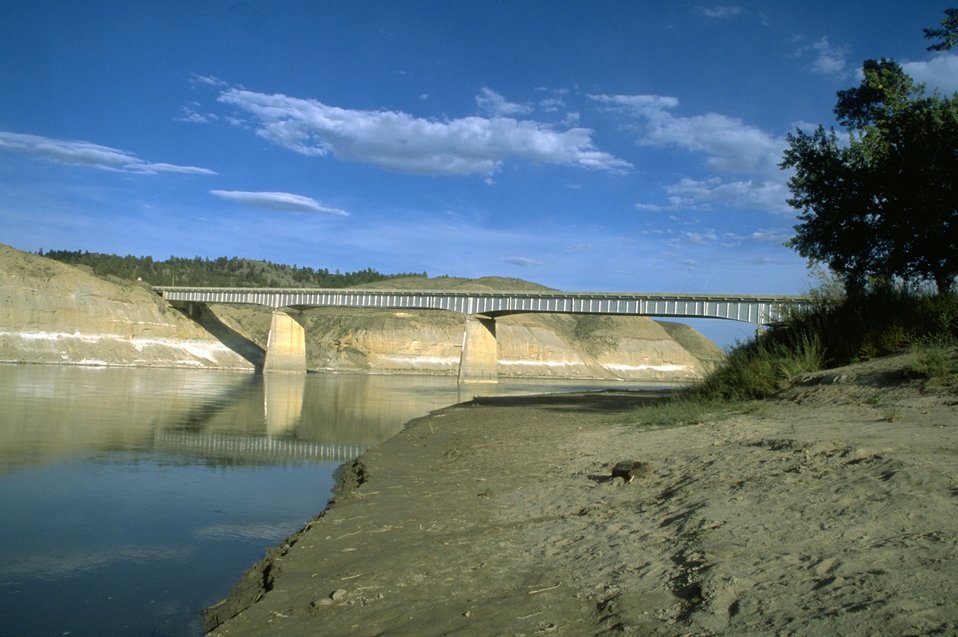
Fred Robinson Bridge over the Missouri River